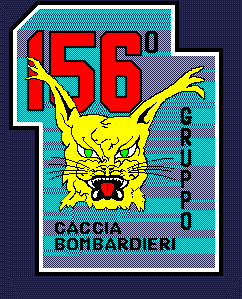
ensign of the 156º Gruppo (156nd Group) of the Aeronautica Militare (Italian Air Force). Italiano: distintivo del 156º Gruppo della dell'Aeronautica Militare.